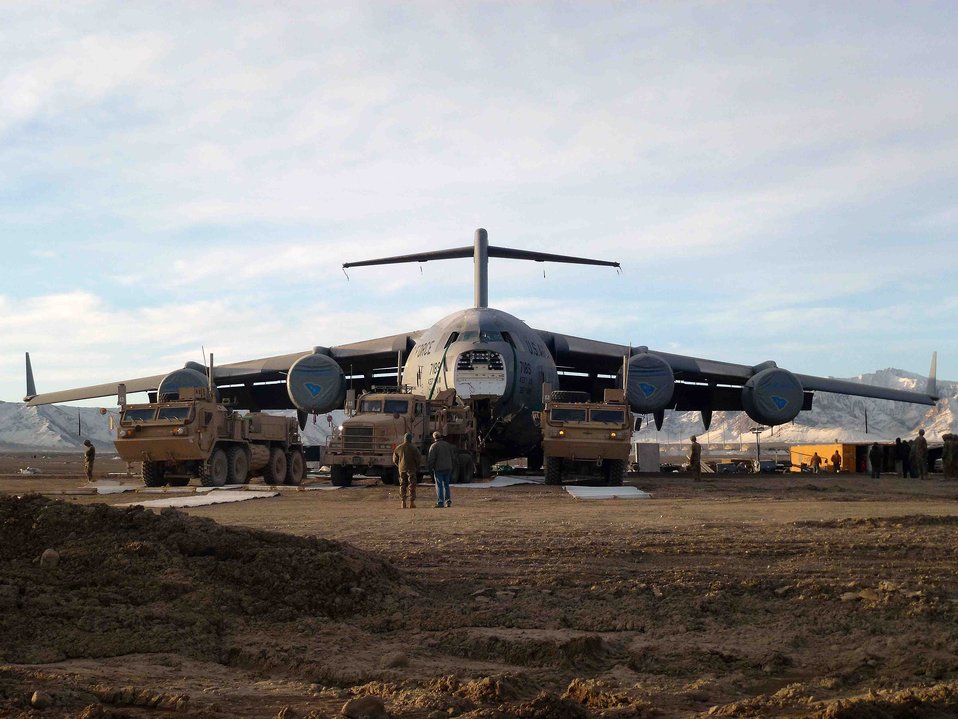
C-17 Recovery

Army vehicles begin their efforts to recover a C-17 Globemaster III after it slid off the runway in Logan Province, Afghanistan. Air Force engineers worked with the Army and civilian engineers for the recover efforts.